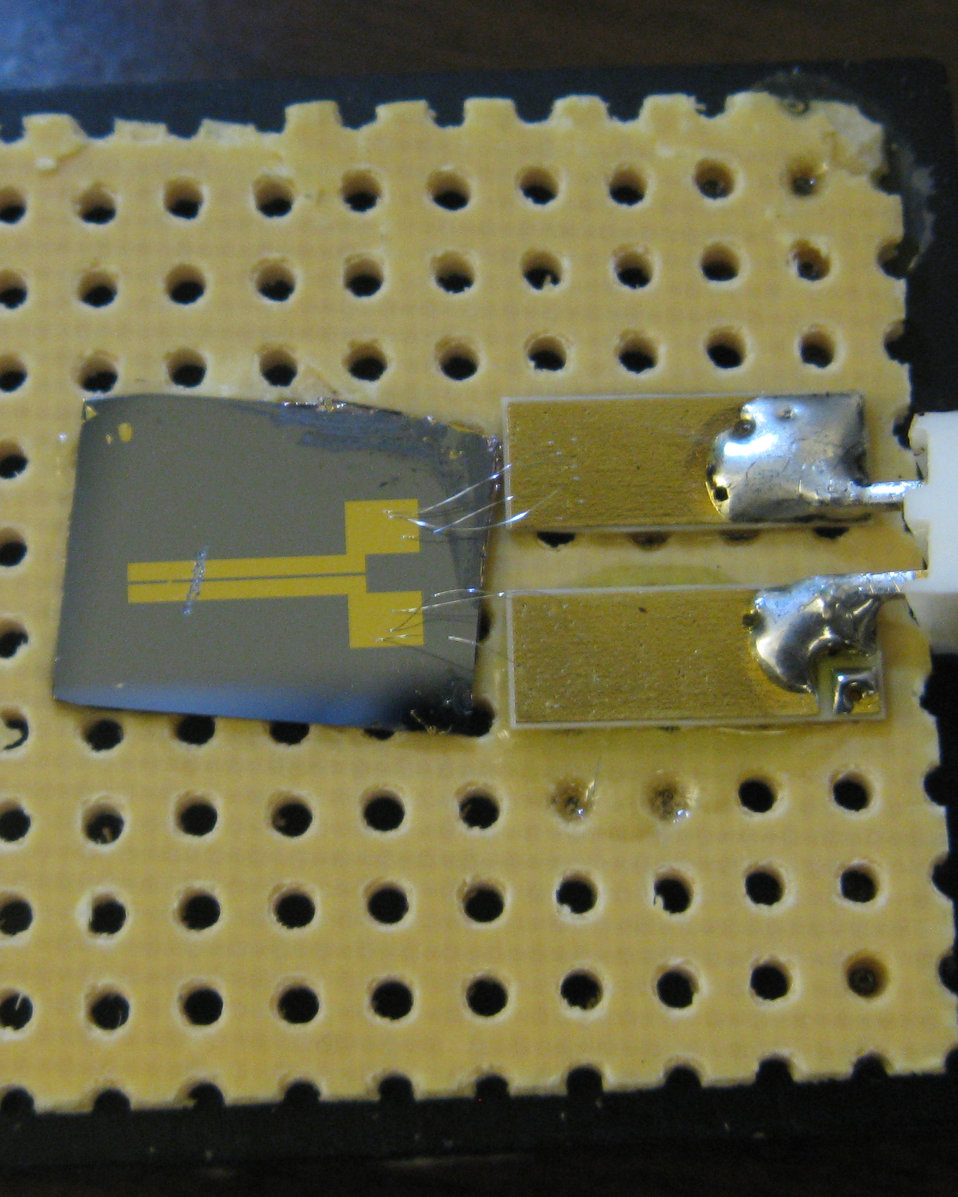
JILA; Radiation Instrument

JILA instrument for generating terahertz radiation. Ultrafast pulses of near-infrared laser light enter through the lens at left, striking a semiconductor wafer studded with electrodes (transparent square barely visible under the white box connected to orange wires) bathed in an oscillating electric field. The light dislodges electrons, which accelerate in the electric field and emit waves of terahertz radiation. The radiation bounces off the reflective dishes at the bottom and top of the photo and hits the circular detector on the right.